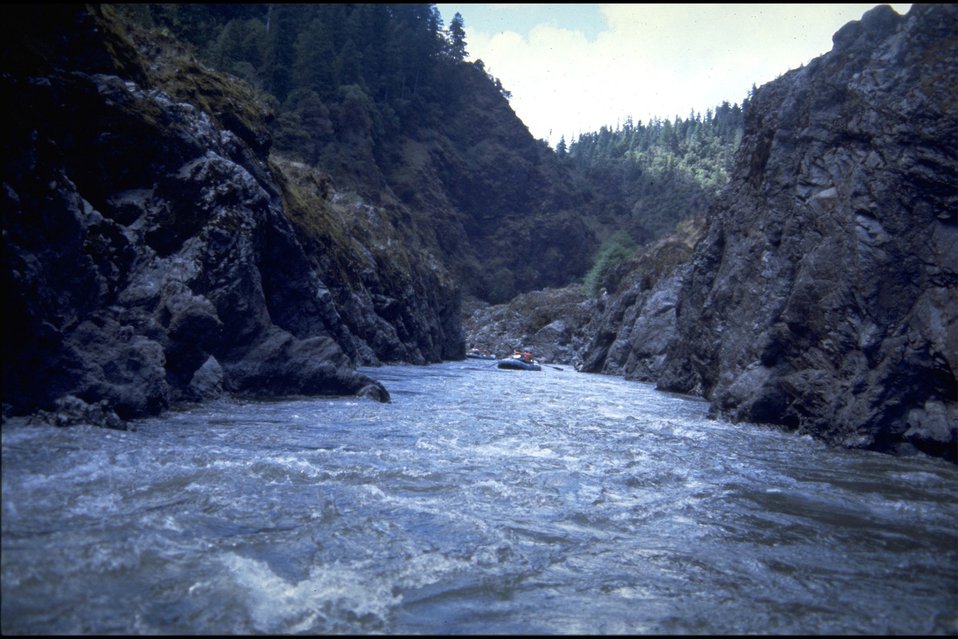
Rogue River; Rafting on Mule Creek Canyon.